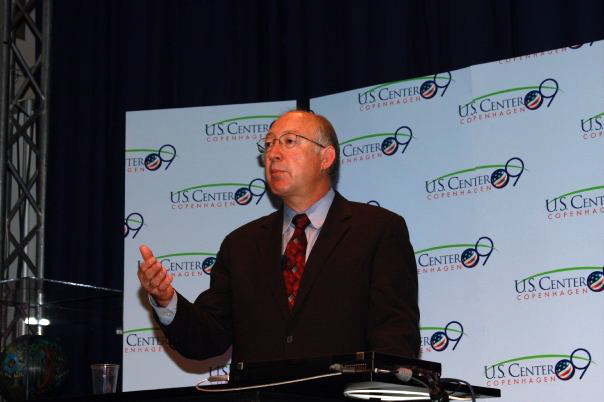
Presentation by U.S. Secretary of Interior

U.S. Secretary of the Interior Ken Salazar at the U.S. Center at COP15, Bella Center, Copenhagen, Denmark on December 11, 2009.